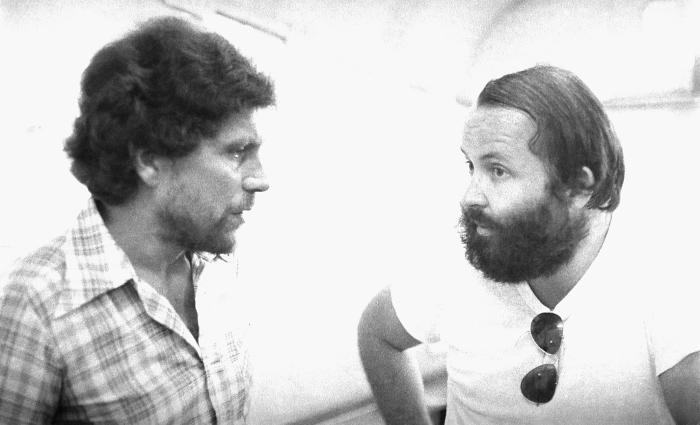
World Health Organization epidemiologists Dr. Daniel Tarantola (Lt), and Dr. Pierre Claquin were photographed here in 1975 as they discussed findings pertaining to the Bangladesh smallpox eradication program. These team leaders were tremendously successful as they integrated eradication team efforts in order to maximize efficiency while managing such a daunting task. Dr. Claquin, an accomplished photographer, especially known for his Bangladeshi themes, captured many of these historic smallpox eradication photographs.